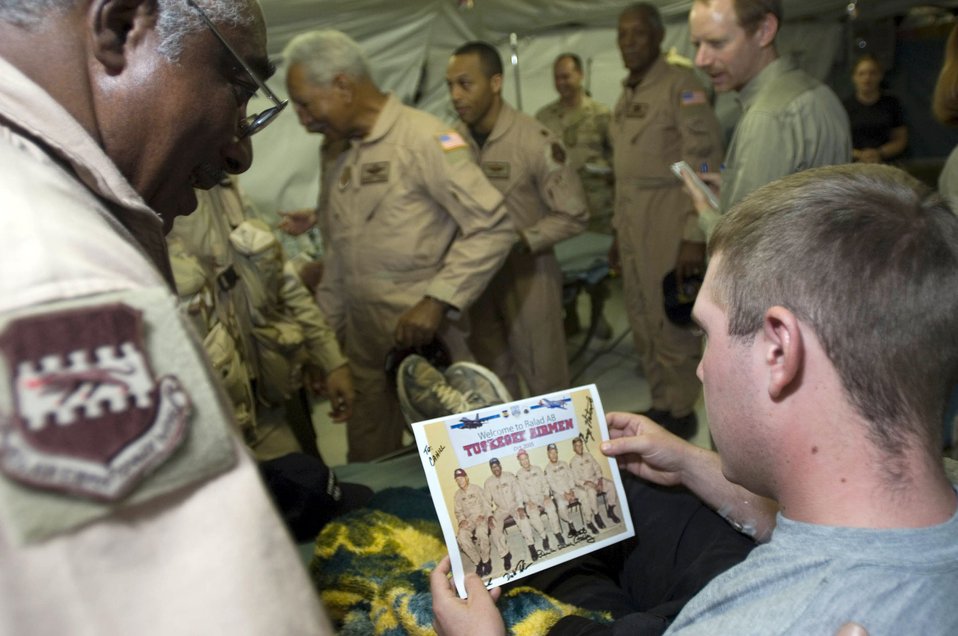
Tuskegee Airmen

BALAD AIR BASE, Iraq (AFPN) -- Tuskegee Airman Retired Col. Dick Toliver passes out a signed group photo to Army Sgt. Thomas Cahill. The Tuskegee Airmen shared stories, encouragement, smiles and thanked patients at the 332nd Expeditionary Medical Group's Air Force Theater Hospital in central Iraq on Oct. 27.